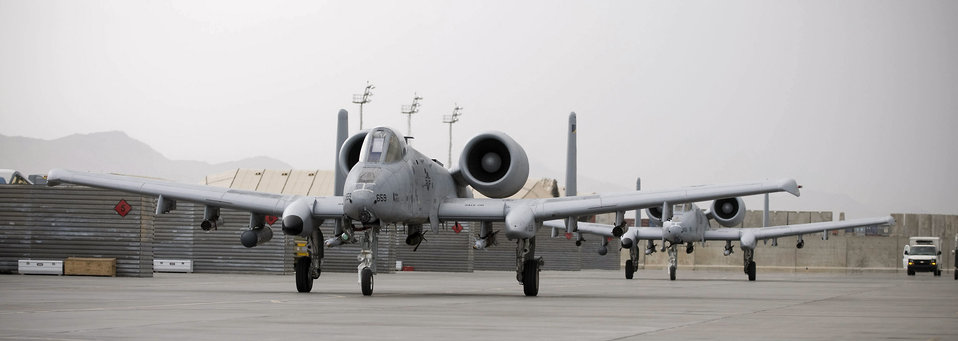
Pilots provide emergency close air support

Two A-10 Thunderbolt II jets taxi out to the runway July 26 at Bagram Airfield, Afghanistan. The jets are experts at close air support missions and have proven to be invaluable despite being well past their expected useful lifespan.